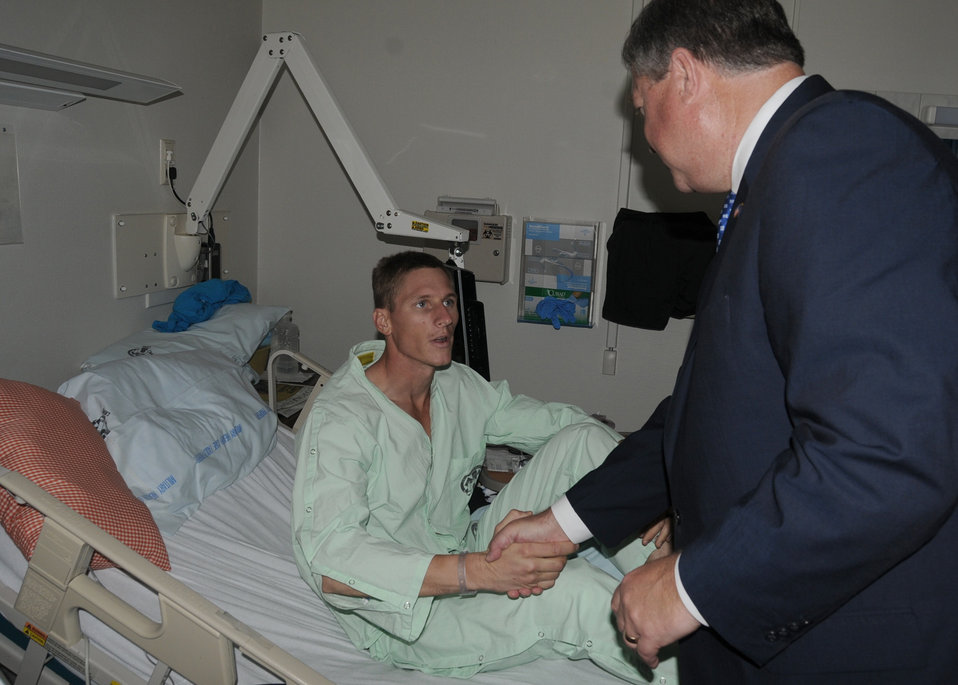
SecAF at Ramstein

Secretary of the Air Force Michael Donley visits Marine Sgt. Andrew Metelski June 18, 2011, at Landstuhl Regional Medical Center, Germany. Sergeant Metelski is being treated for injuries sustained while deployed to Afghanistan.